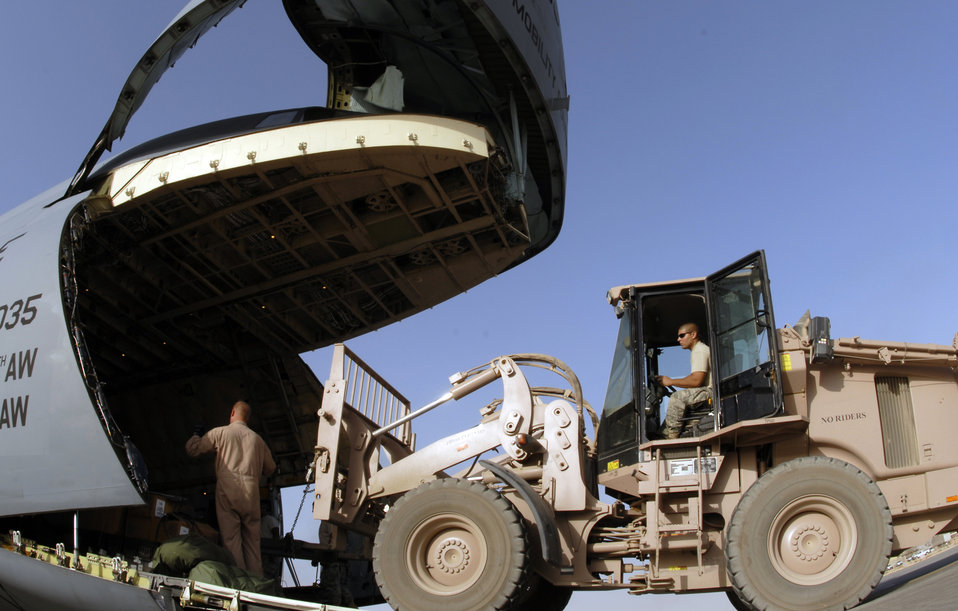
Heavy lifters

Staff Sgt. Jeffrey Szymanski (right) loads a jet engine aboard a C-5 Galaxy Sept. 26 at Joint Base Balad, Iraq. The C-5 is assigned to the 436th Airlift Wing at Dover Air Force Base, Del. C-5s are among the largest aircraft in the world, delivering large amounts of supply goods to units throughout the U.S. Central Command area of responsibility. Sergeant Szymanski, an air transportation journeyman with the 332nd Expeditionary Logistics Readiness Squadron, is deployed from Westover Air Reserve Base, Mass.